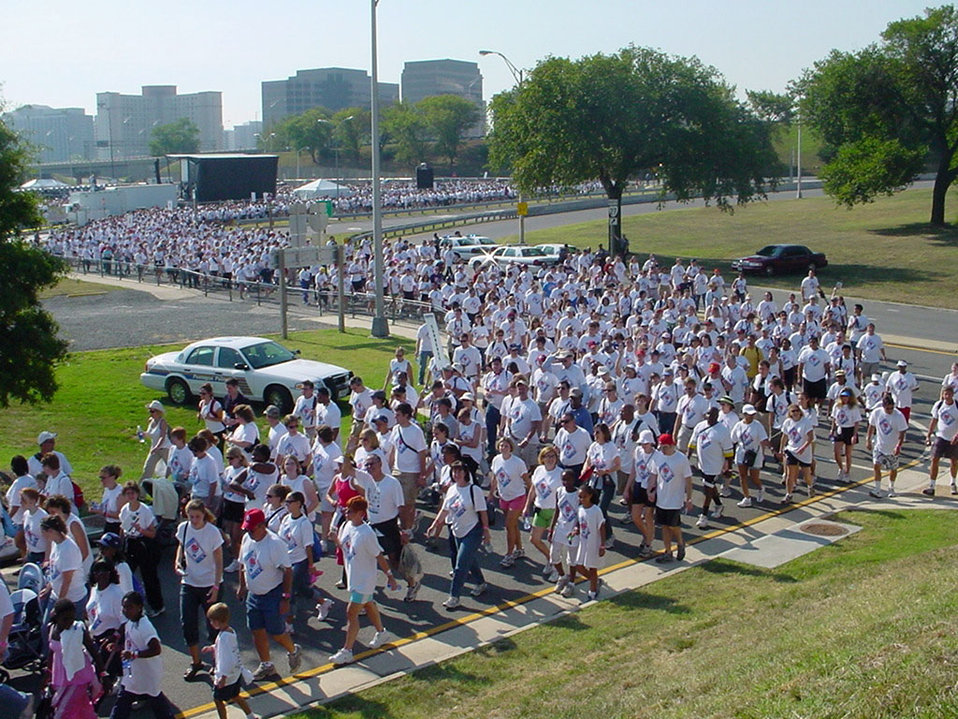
Freedom Walk

WASHINGTON - Thousands of people participated in the first